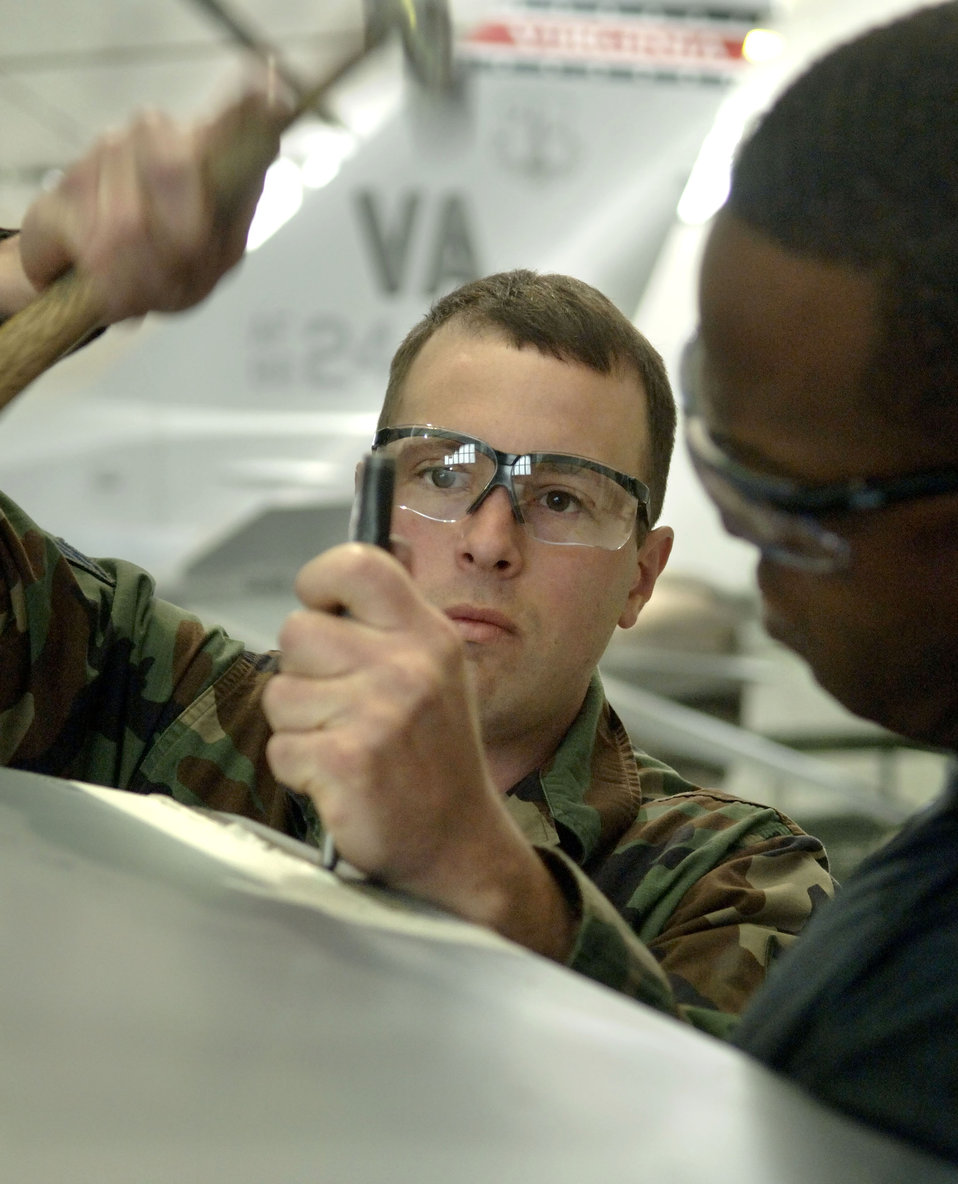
Fighter aircraft transition

Staff Sgts. Robert McCormick and Jonny Deloach repair the trailing edge of an F-16 Fighting Falcon horizontal stabilizer at the Virginia Air National Guard located in Sandstone, Va., on Thursday, March 30, 2006. The Virginia ANG is currently transitioning to the new F-22A Raptor at Langley Air Force Base and will replace the F-16s as early as October 2007. They are both assigned to the 192 Aircraft Maintenance Squadron.